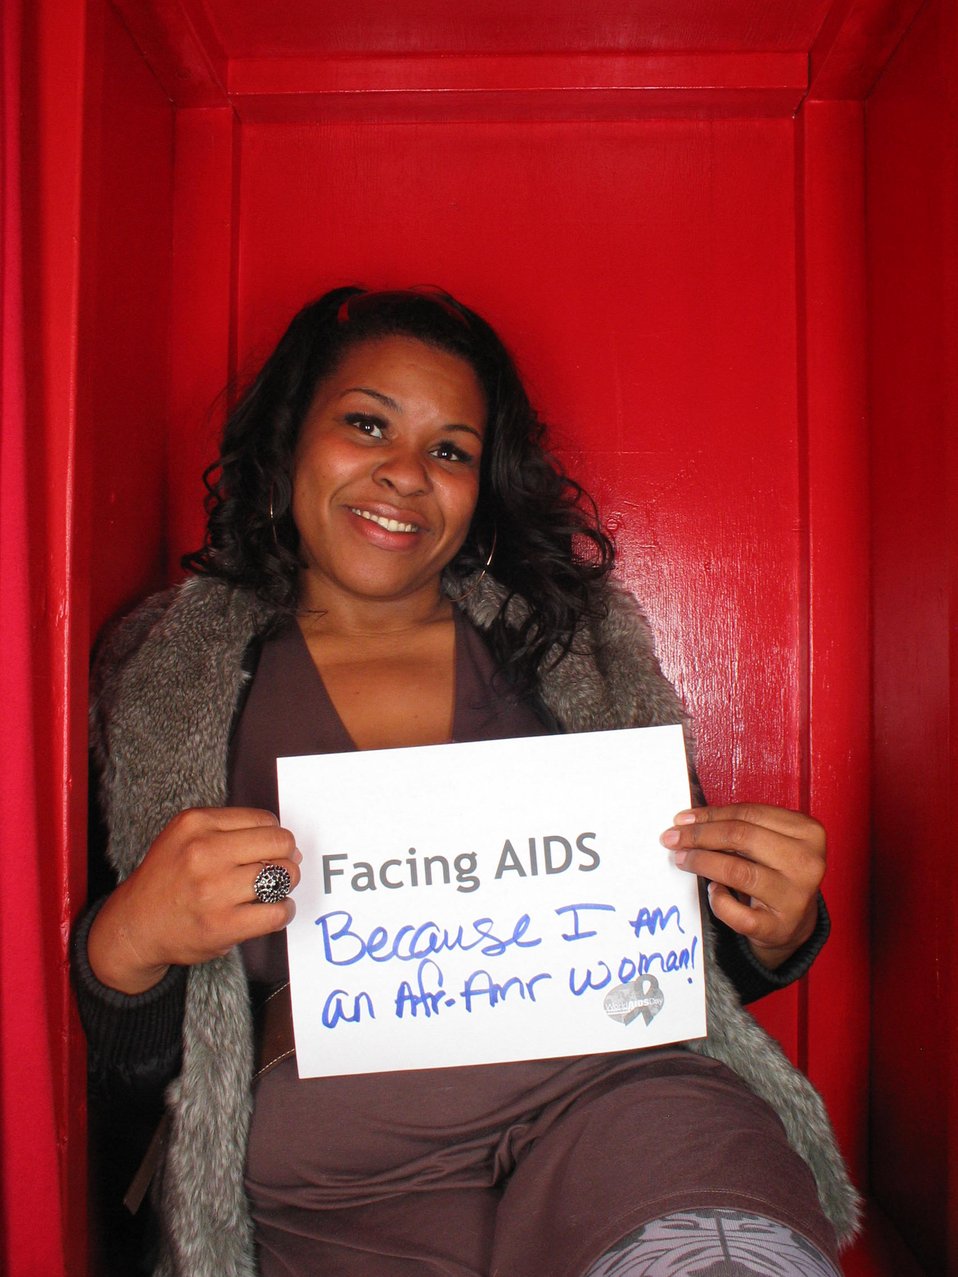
Facing AIDS becaise I am an African American woman!